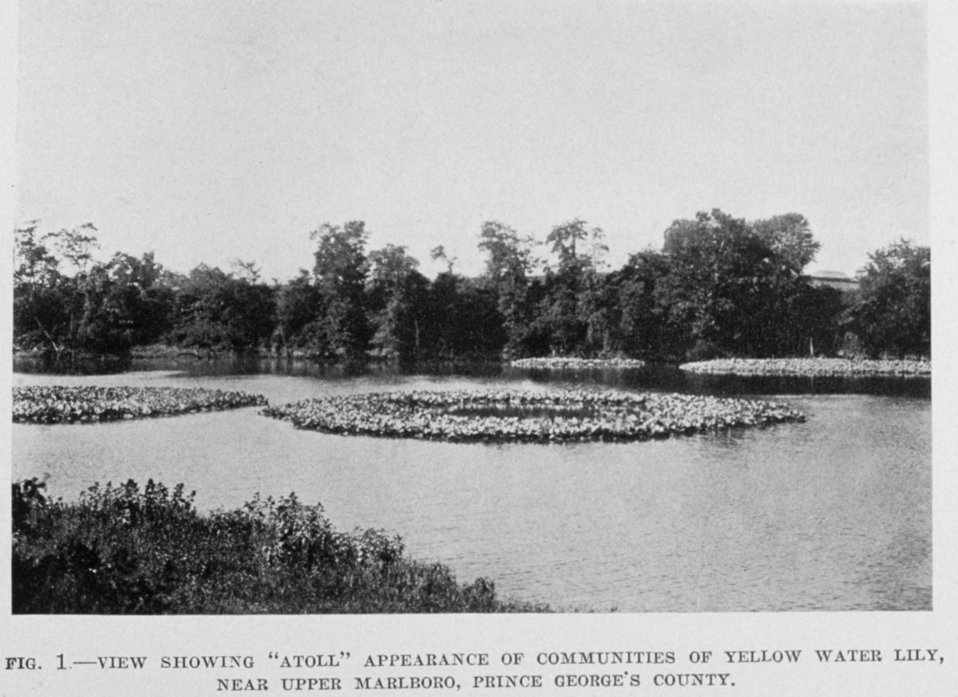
Atoll appearance of yellow water lily near Upper Marlboro, Prince George's County.